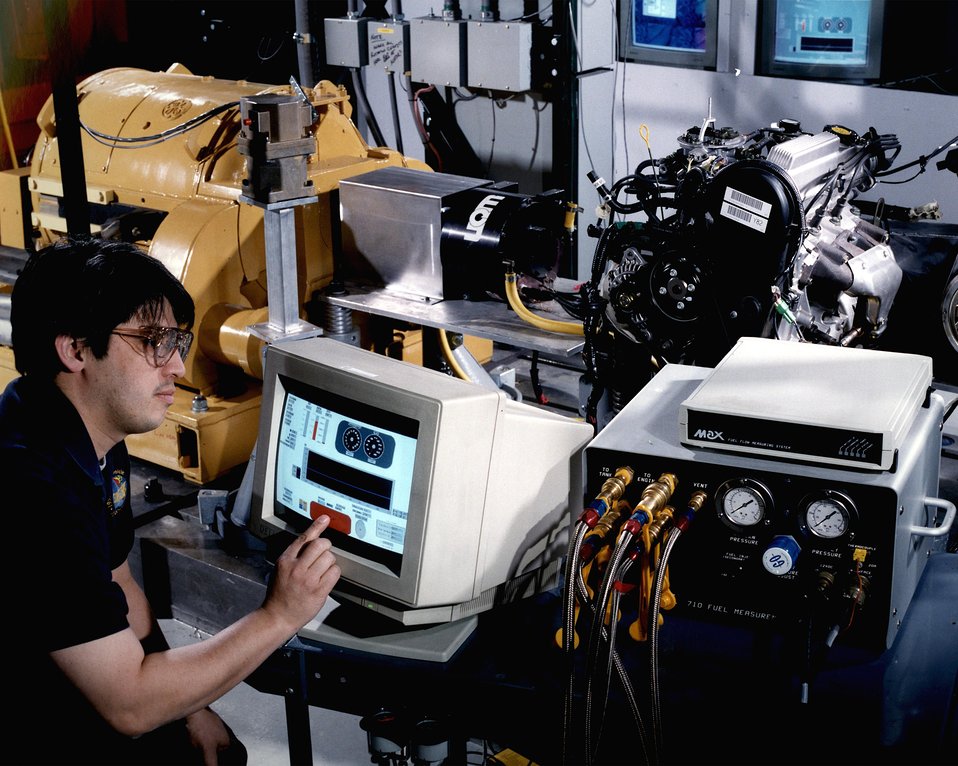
ANL'S ADVANCED POWERTRAIN TEST FACILITY FOR TESTING HEVS.

SHOWN IN THE IMAGE IS THE ADVANCED POWERTRAIN TEST FACILITY, A UNIQUE HYBRID VEHICLE SIMULATION FACILITY FOUND AT ANL'S TRANSPORTATION R&D DEVELOPMENT CENTER. THE FACILITY EVALUATES THE EFFICIENCY AND EFFECTIVENESS OF HYBRID ELECTRIC VEHICLE (HEV) COMPONENT AND SYSTEMS DESIGNS. HEVS ARE PROPELLED BY TWO ENERGY SOURCES, USUALLY AN ELECTRIC MOTOR AND AN INTERNAL COMBUSTION ENGINE POWERED BY GASOLINE OR AN ALTERNATIVE FUEL.